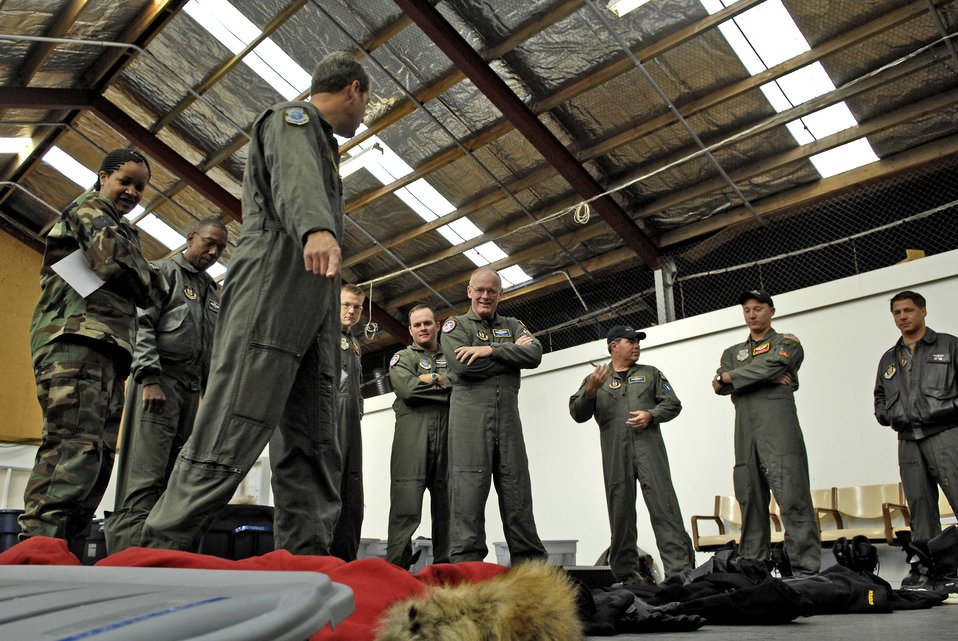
Getting ready to fly to McMurdo

Senior Master Sgt. Jim Masura briefs his C-17 Globemaster III loadmasters on cold weather gear for the upcoming winter fly-in missions to Antarctica at Christchurch, New Zealand, Aug. 19. A C-17 and 31 Airmen from McChord Air Force Base, Wash., will begin the annual winter fly-in augmentation of scientists, support personnel, food and equipment for the U.S. Antarctic Program at McMurdo Station Aug. 20. WinFly is the opening of the first flights to McMurdo station, which closed for the austral winter in February.